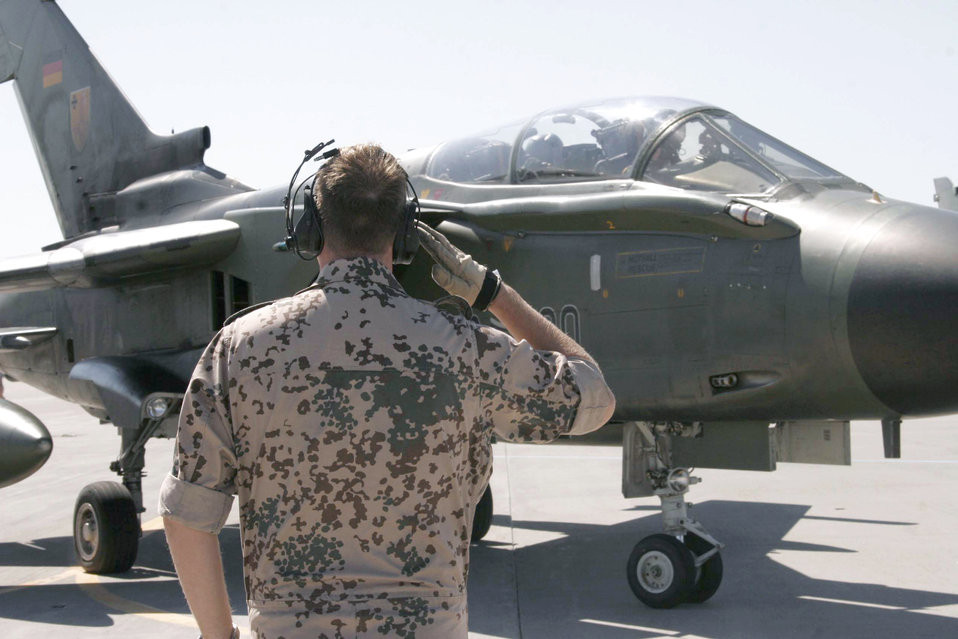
Allied aircrews train for action

Tech. Sgt. Danny Behrens renders a salute after helping launch his Tornado interdiction strike aircraft for a training flight at Mountain Home Air Force Base, Idaho, on Wednesday, June 21. German air force aircrews and maintenance teams are working alongside their American counterparts during a joint training exercise. Sergeant Behrens is a crew chief with the German air force.